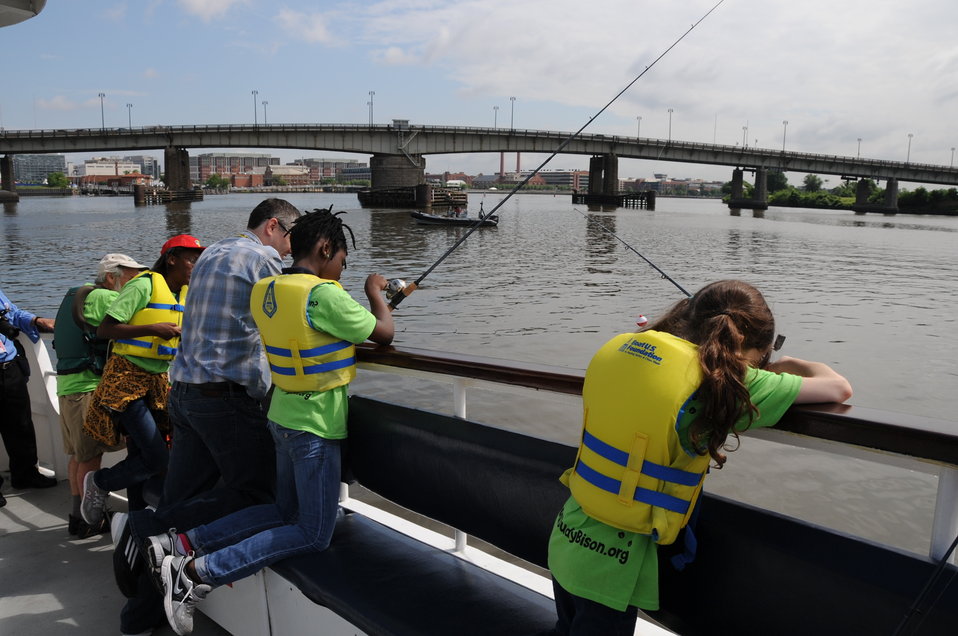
2013 National Fishing and Boating Week

Local students prepare to enjoy fishing at the annual kick-off of National Fishing and Boating Week on the Anacostia River in Washington D.C.